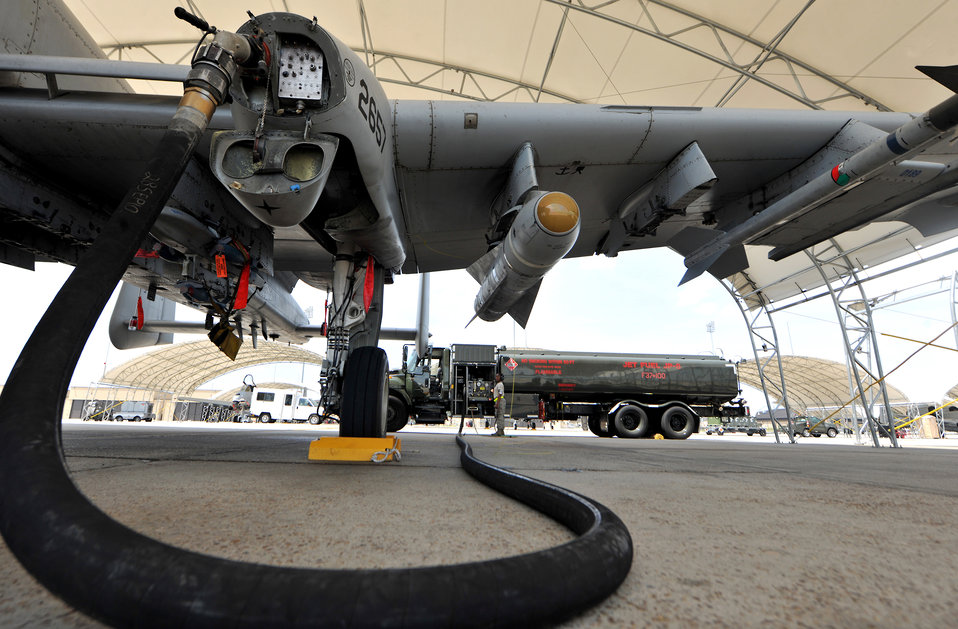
Got gas?

An A-10 Thunderbolt II is refueled April 11, 2011, on the flightline at Moody Air Force base, Ga.